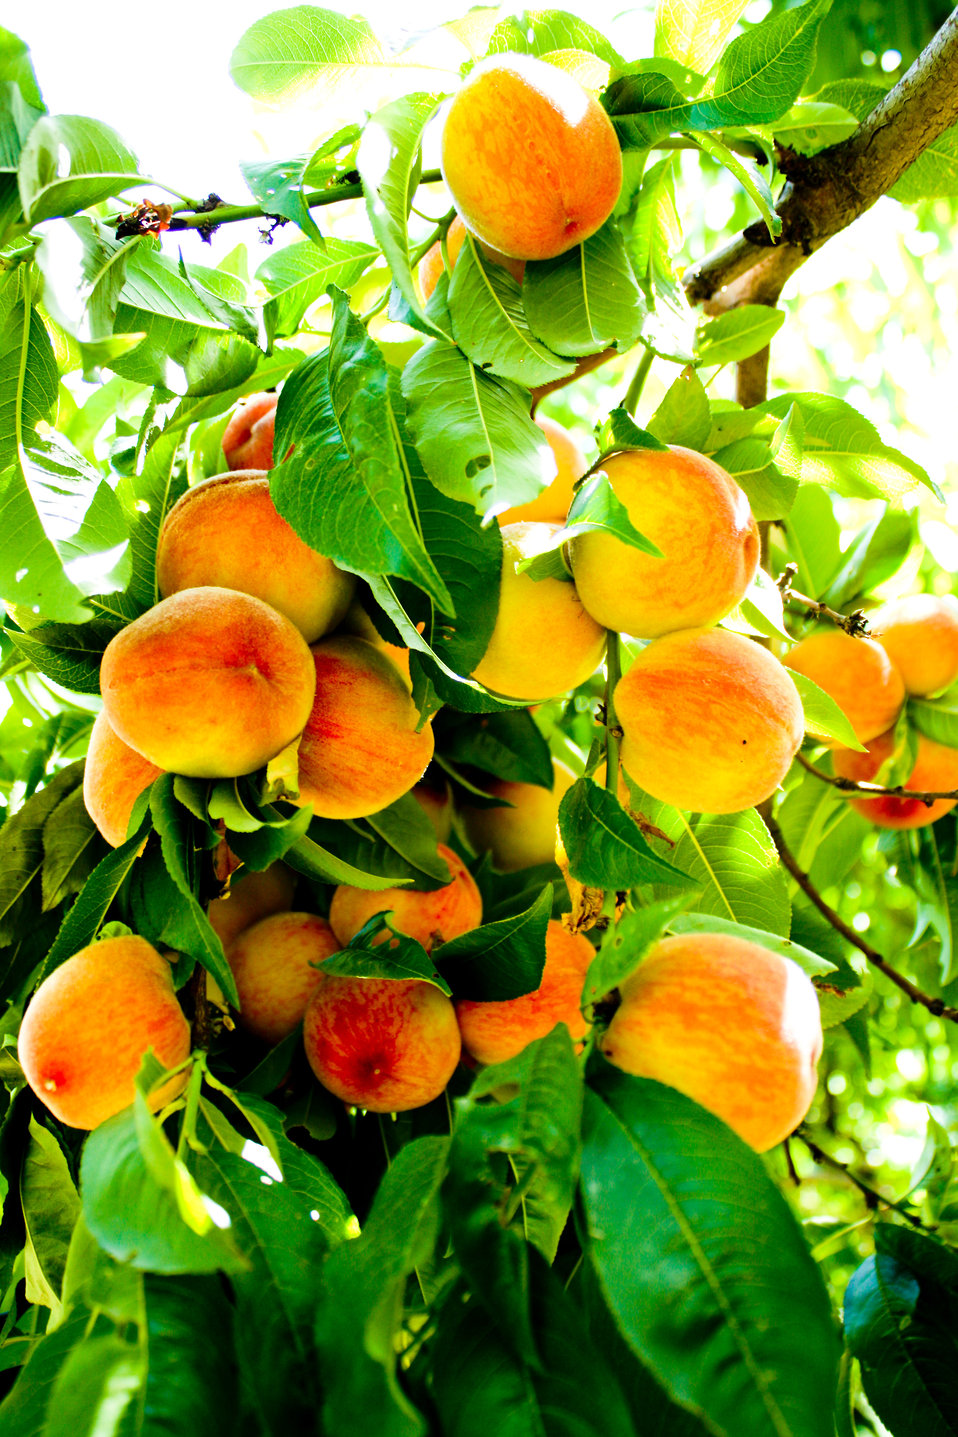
Fresh Peaches in Swat